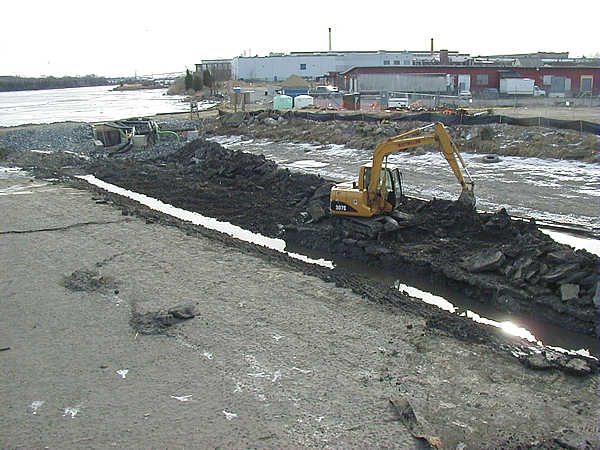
Winter 2003, Another view of the excavation

With the Acushnet River temporarily diverted, the removal of contamined sediment was significantly more efficient.